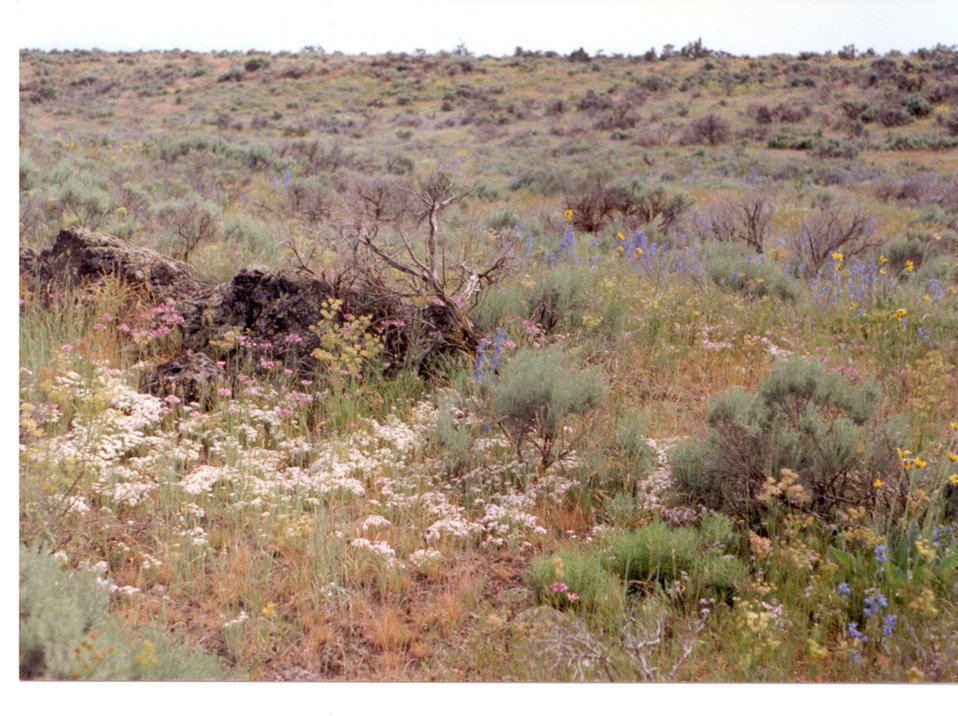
Spring Wildflowers Craters of the Moon Shoshone Field Office USRD Upper Snake River District